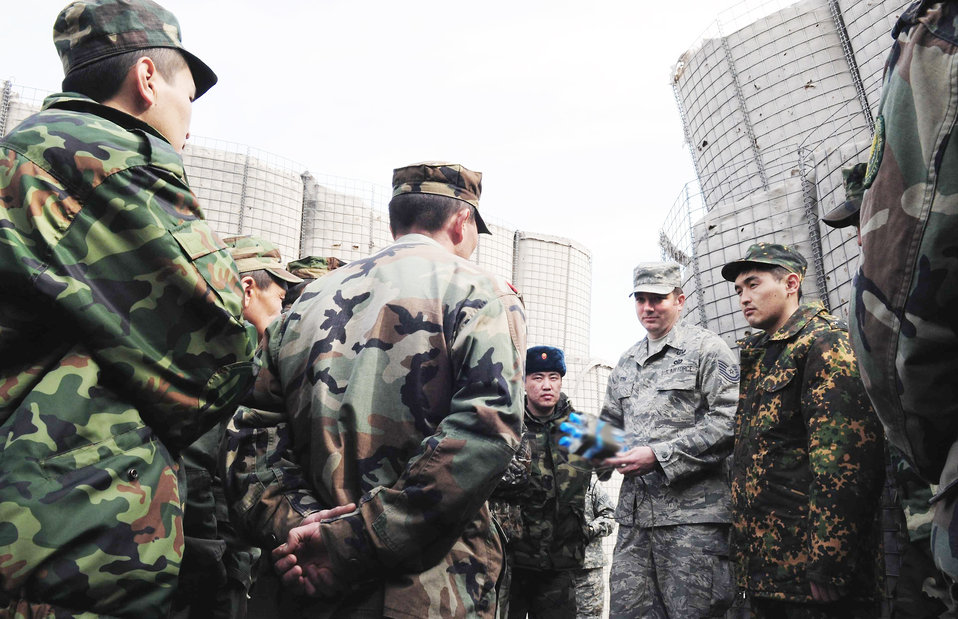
Joint EOD training benefits 2 nations

Tech. Sgt. Michael Yates discusses improvised water charges with Kyrgyz army explosive ordnance disposal technicians during a subject matter information exchange March 17, 2010, at the Transit Center at Manas, Kyrgyzstan. Sergeant Yates is the 376th Expeditionary Civil Engineer Squadron EOD Flight chief.